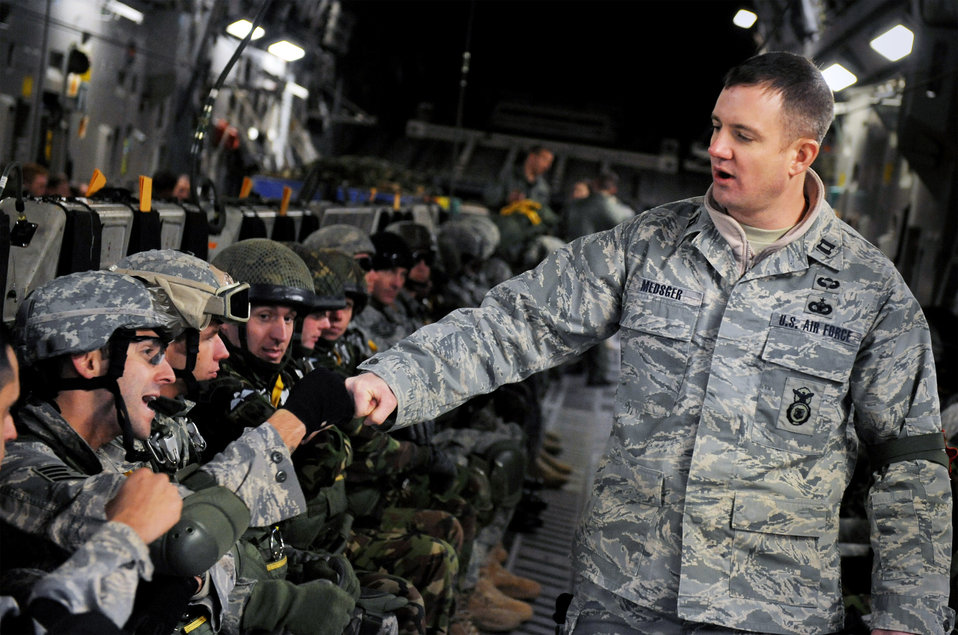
All fired up!

Capt. Jason Medsger motivates jumpers before a static line parachute jump out of a C-17 Globemaster III Feb. 5 at Moody Air Force Base, Ga. The 820th Security Forces Group was performing a jump with members of the Royal Air Force.